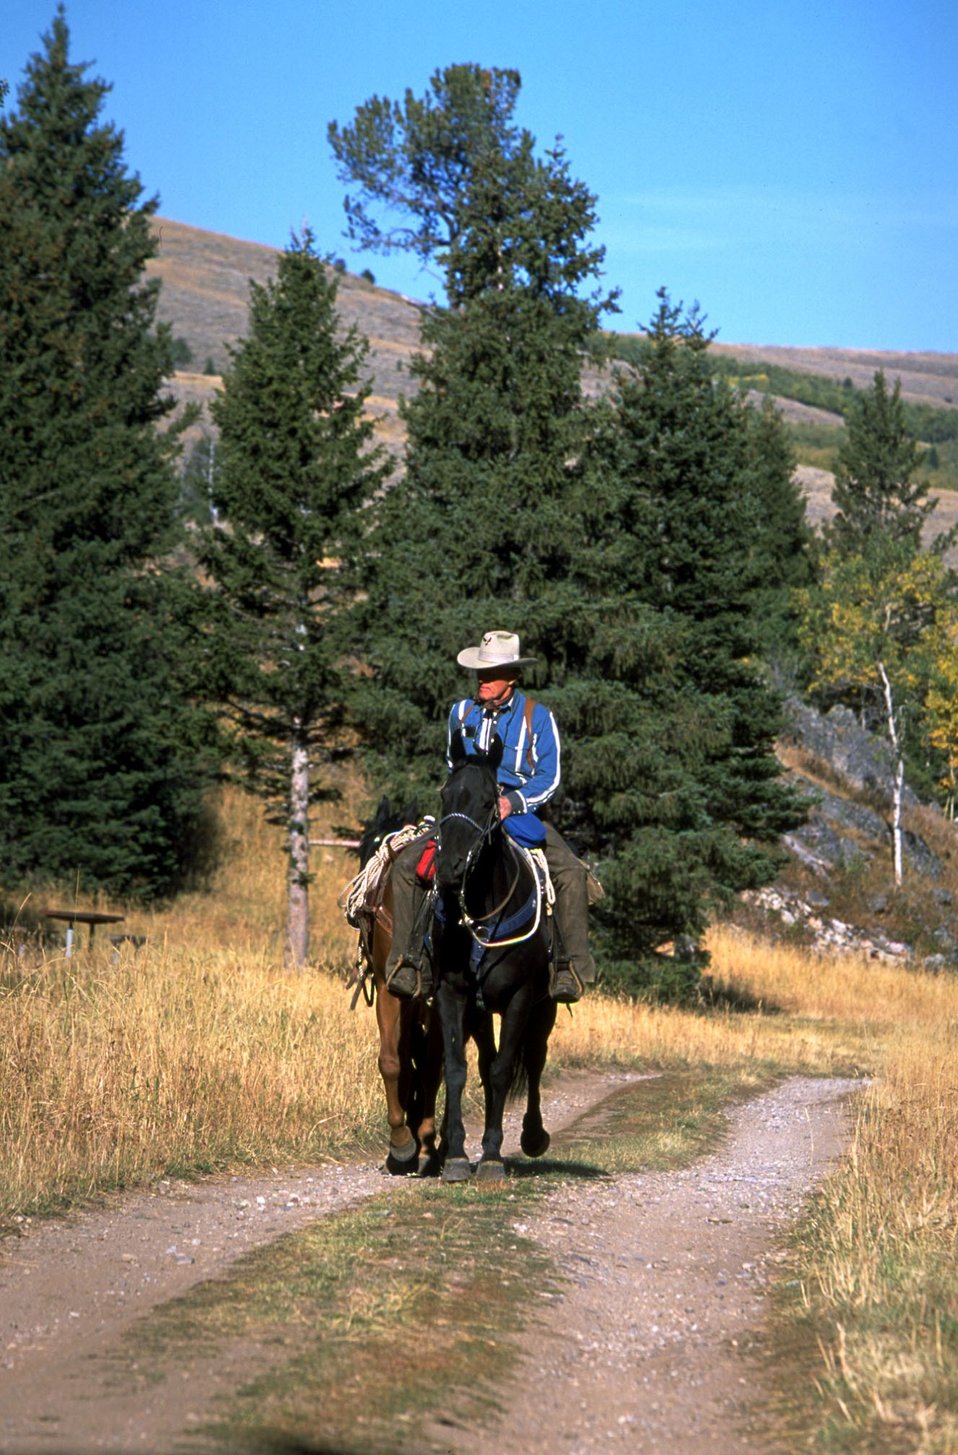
Horse man leading a pack horse in the Centennial Mountains